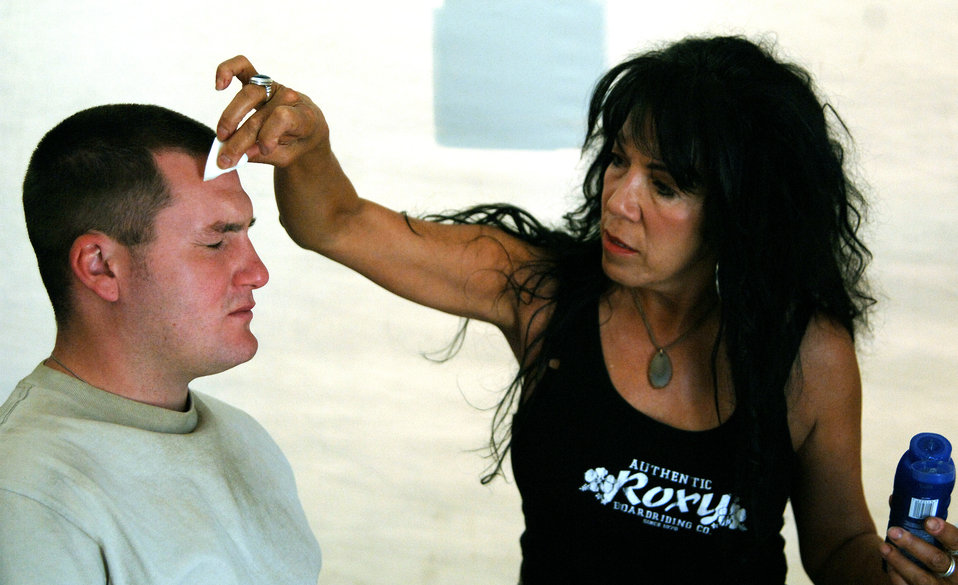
Movie project transforms Holloman

Makeup artist Linda Vallejo applies makeup and sunscreen to Airman 1st Class Joshua Clanton on the set of the movie